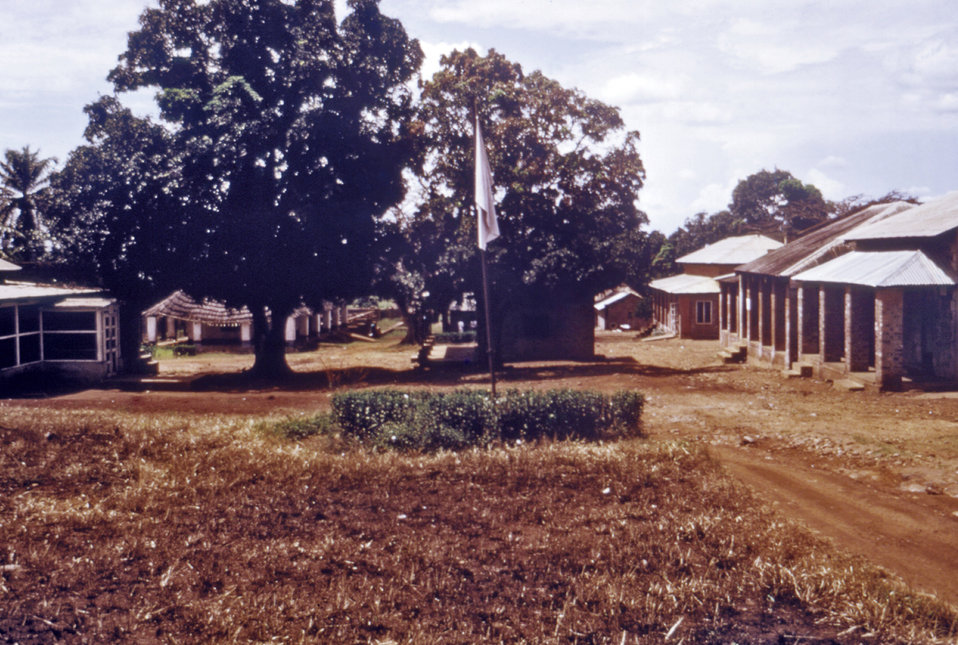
This photograph shows Maridi Hospital in Maridi, Sudan, which was one of the areas in Sudan that was devastated by the 1976 Ebola outbreak.